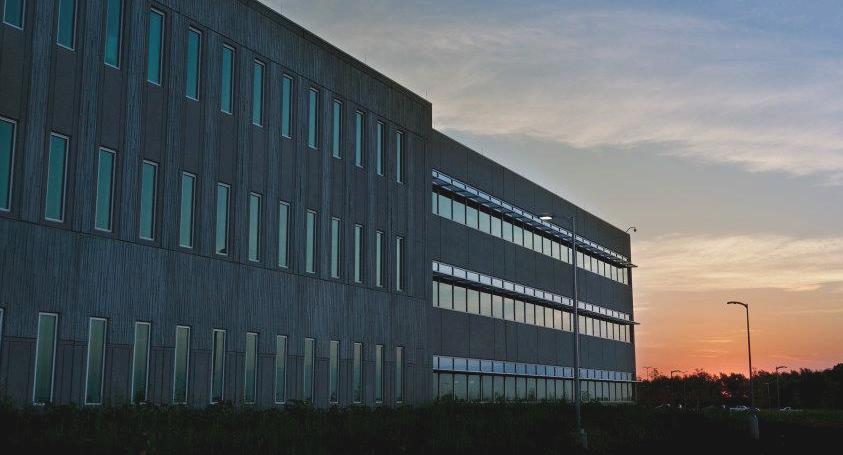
The new smaller, more efficient Kansas City Plant will reduce annual operating costs by $100 million supports the NNSA vision of a more responsive and cost-effective nuclear security enterprise.